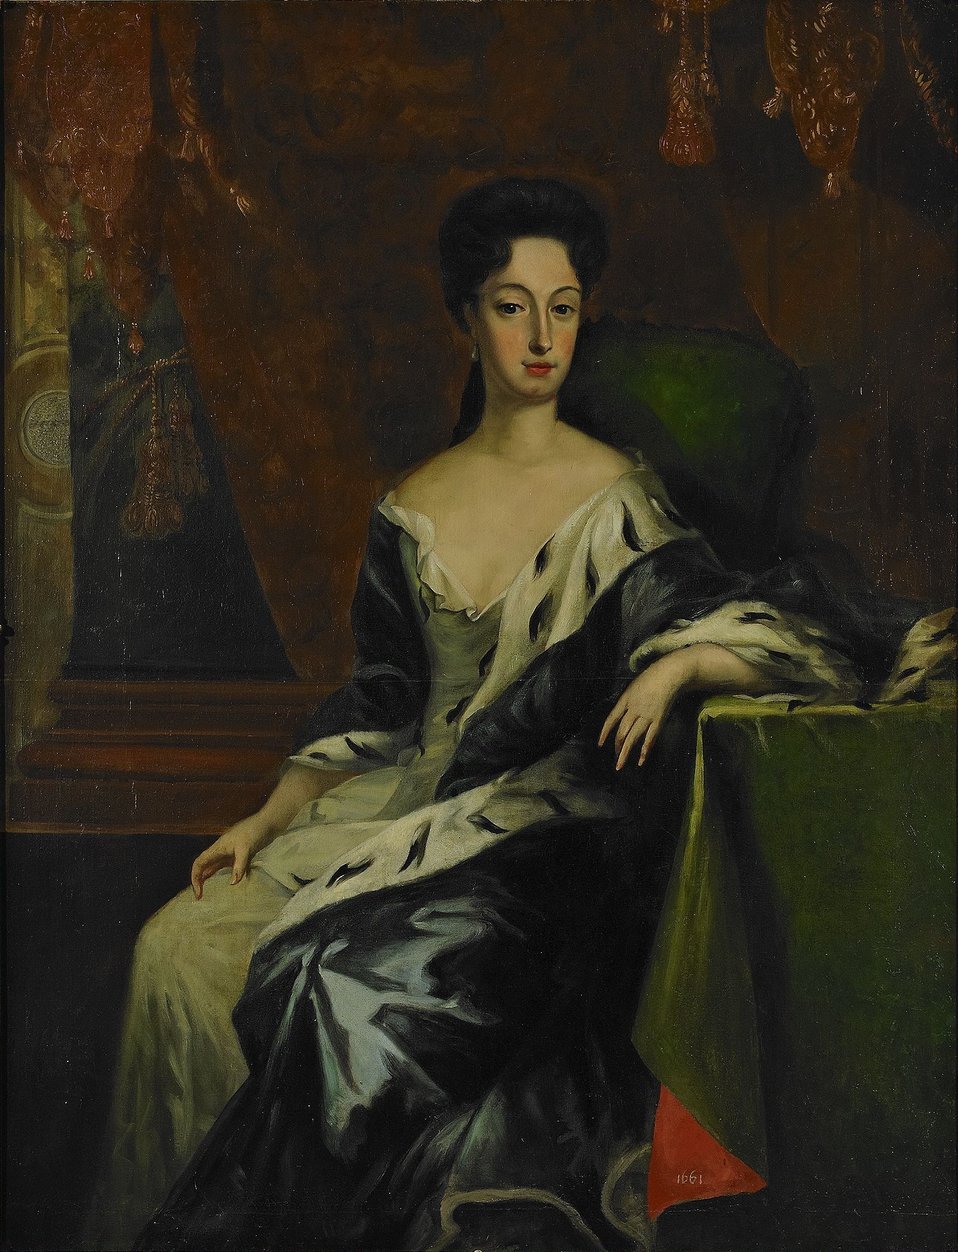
David von Krafft - Porträt der Prinzessin Hedwig Sophia von Schweden, Herzogin von Holstein-Gottorf